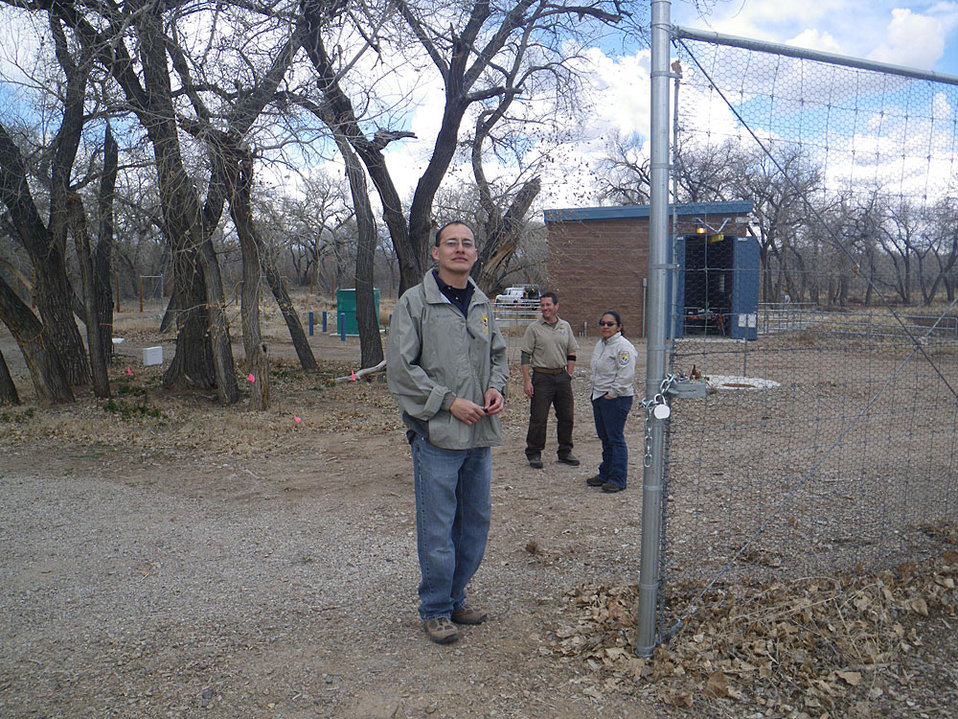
Joaquin Baca served in the U.S. Army for six years, and was deployed to Kuwait. While on duty, Baca was amazed by the environmental destruction that he saw there. From that moment on, he resolved to study environmental science when he came back home. This led to the commitment and dedication in his current position with the Service as an Environmental Education Specialist. Through his projects, Baca shares what he learns and inspires others to preserve natural spaces. He believes reaching urban youth is the best way to make changes that will continue in the future.